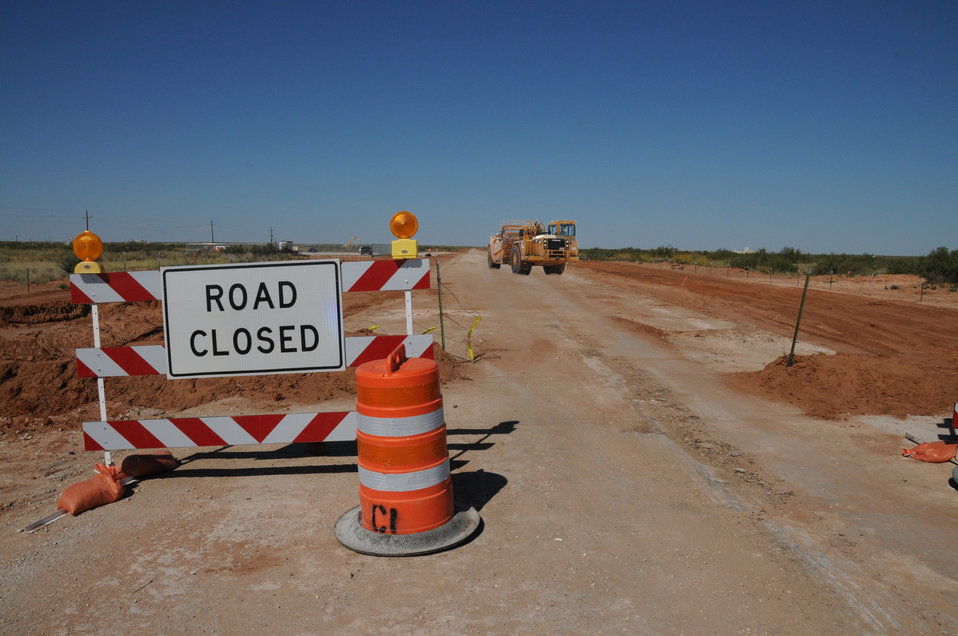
Recovery Act Accelerates Transuranic Waste Disposal Across DOE Complex

South Access Road (before)